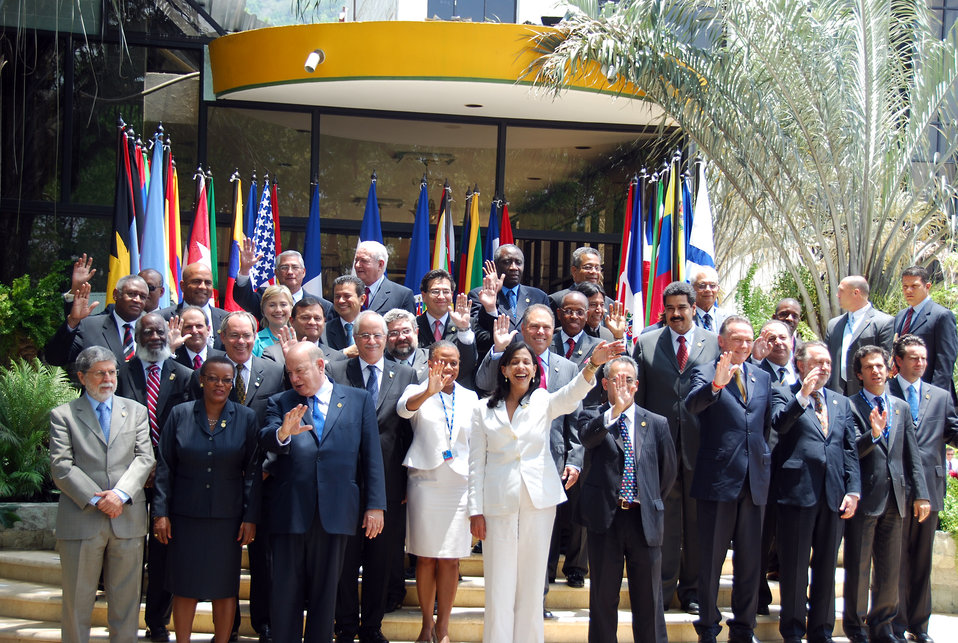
CARICOM Leaders

Official photo of the foreign ministers of the member states of the Organization of American States (OAS) at Club Arabe Hondureno, site of the 39° Organization of American States General Assembly in San Pedro Sula, Honduras, June 2, 2009.